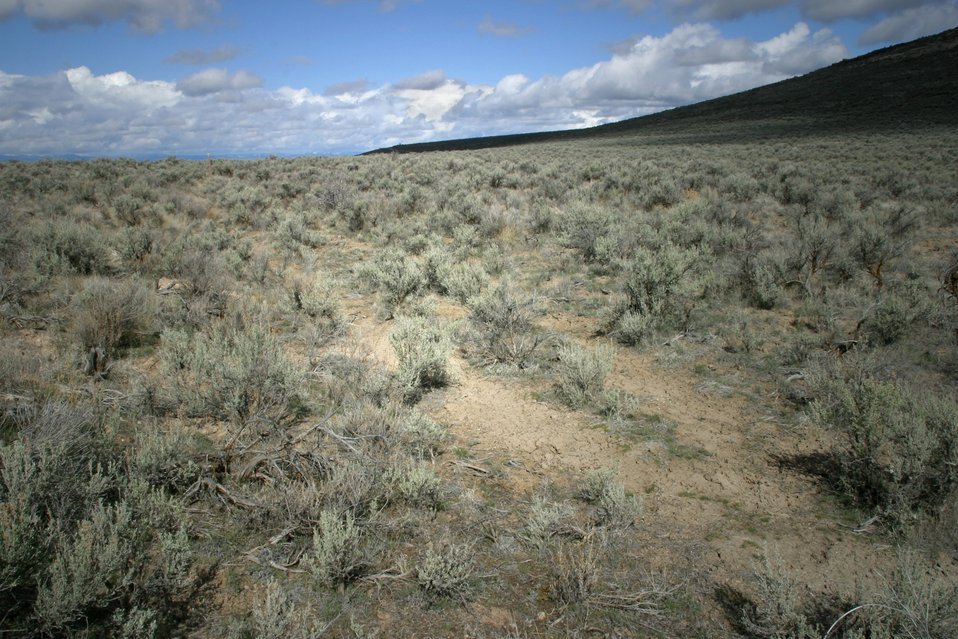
Oregon Trail ruts below the National Historic Oregon Trail Interpretive Center.